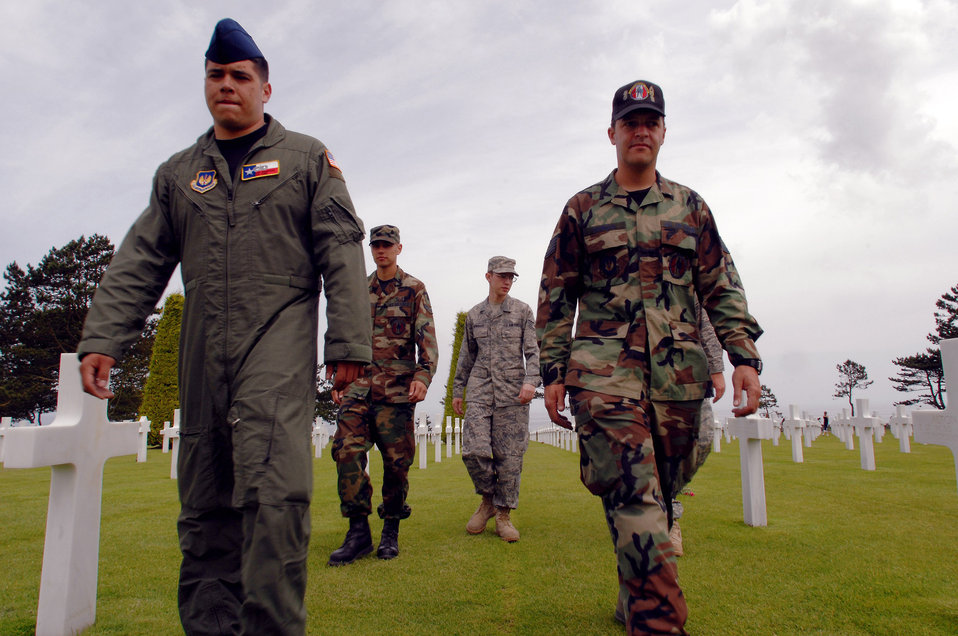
Remembering D-Day

Staff Sgt. Mark Benavides (left to right), Staff Sgt. Jacob Dowrard, Airman 1st Class Mark Hayes and Tech. Sgt. Charles Garcia take a quiet walk to pay their respects to the fallen at the Normandy American Cemetery and Memorial June 5 in Saint Larent-sur-Mer, France. Sergeant Benavides is a crew chief with the 86th Operational Support Squadron, Sergeant Dowrard an integrated aviation specialist from the 86th Aircraft Maintenance Squadron, Airman Hayes is a crew chief from the 86th AXMS, and Sergeant Garcia is a C-130 Hercules mechanic from the 86th AXMS. All are from Ramstein Air Base, Germany, in Normandy to support D-Day commemorations.